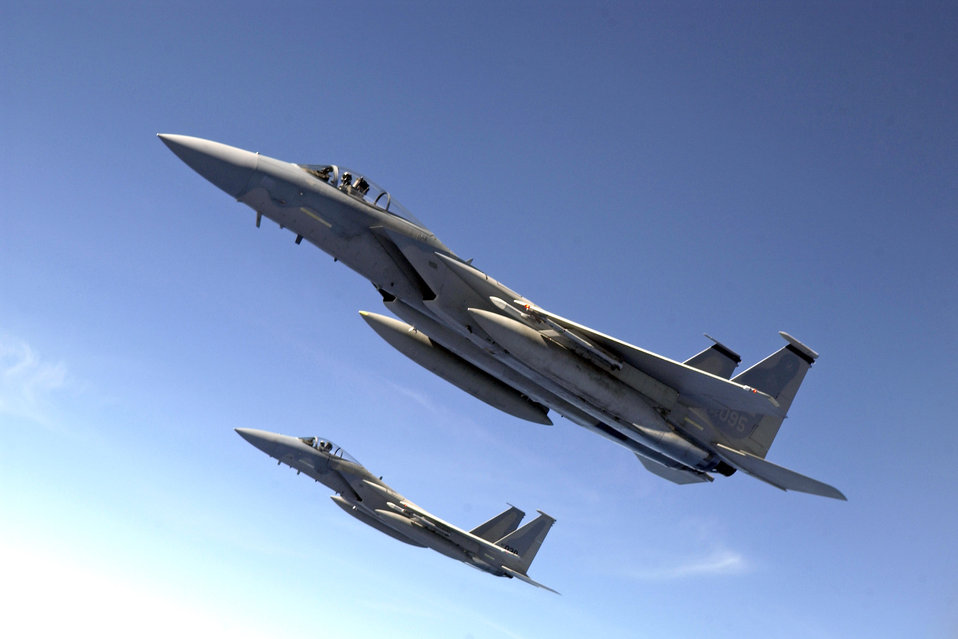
Into the wild blue yonder?

F-15 Eagles from the 44th Fighter Squadron, Kadena Air Base, Japan, fly over the Pacific Ocean Aug. 9 during Exercise Valiant Shield. During the exercise, Air Force aircraft and personnel will participate in integrated joint training with Navy and Coast Guard forces.